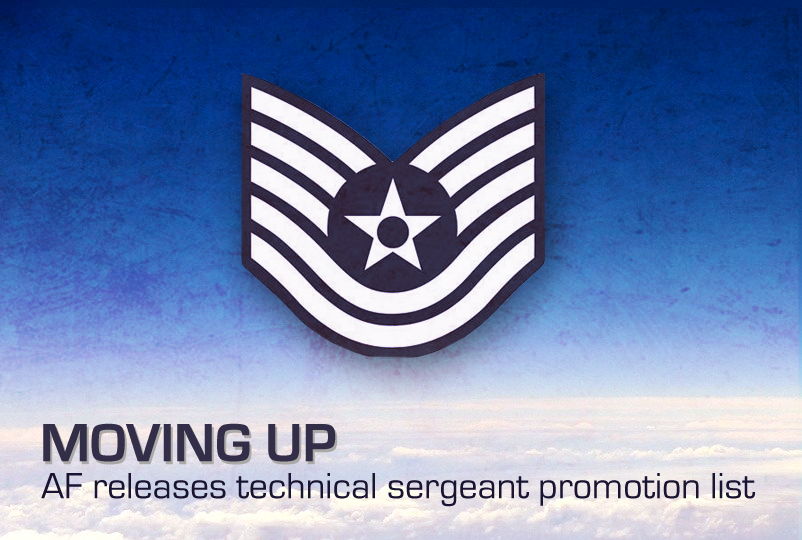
Moving Up